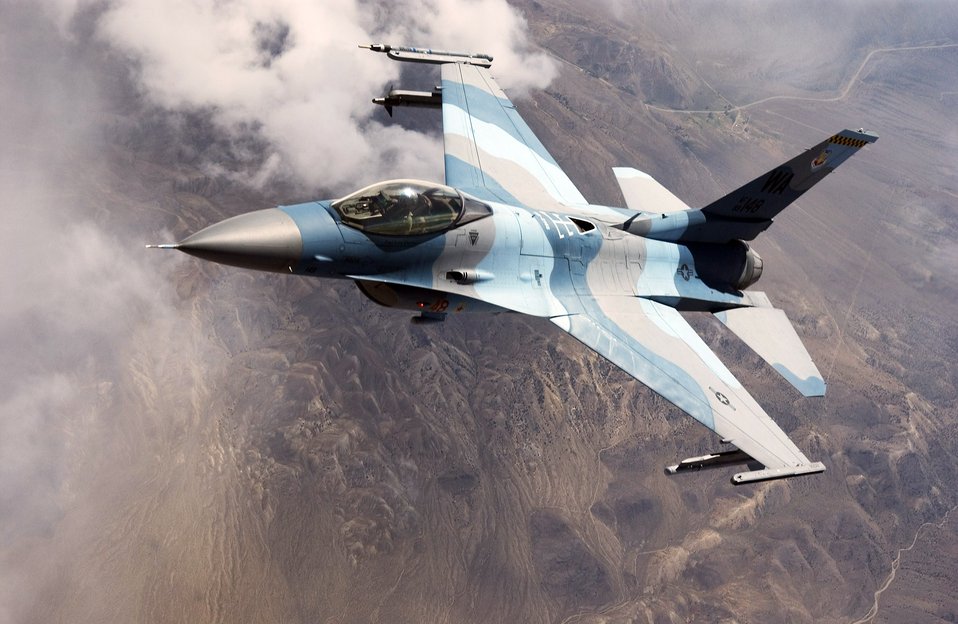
Flying colors

OVER NEVADA -- An F-16 Falcon from the 64th Aggressor Squadron at Nellis Air Force Base, Nev., prepares to continue its mission after refueling during a Red Flag mission recently. The F-16s have a unique paint scheme to match their role as simulated enemy Mig aircraft during quarterly Red Flag exercises.